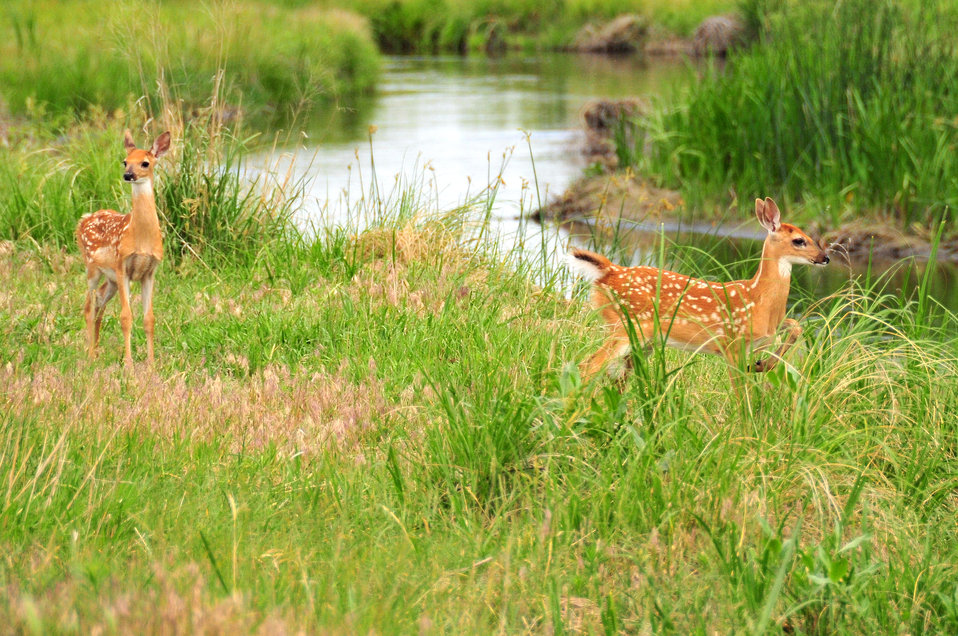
White tailed deer fawns Lacreek NWR 02

Twin white tailed deer fawns on Lacreek NWR.